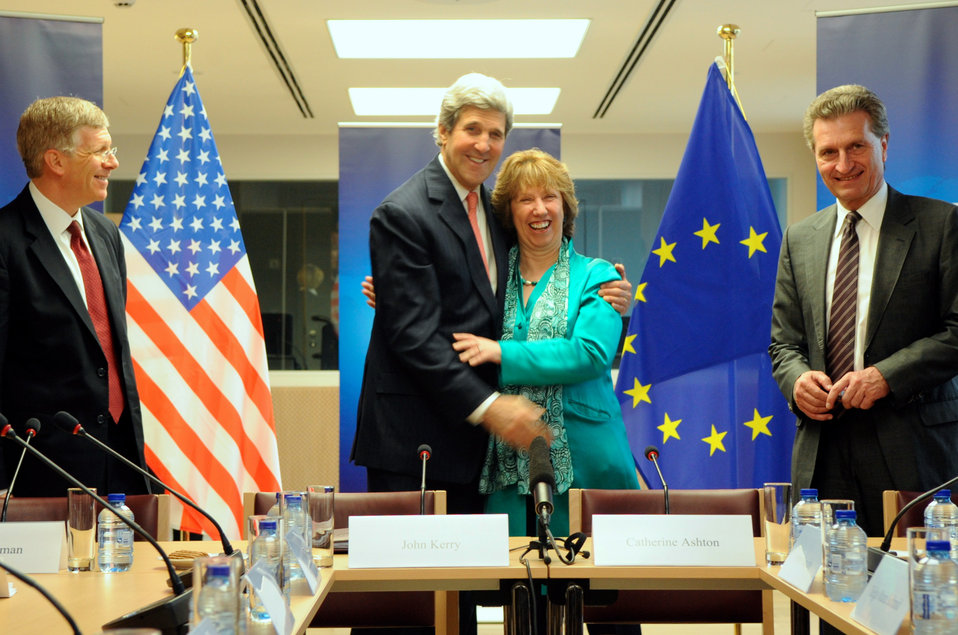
Secretary Kerry Embraces EU High Representative Ashton at Outset of Energy Meeting

U.S. Secretary of State John Kerry embraces European Union High Representative for Foreign Affairs Catherine Ashton in a lighthearted moment before a meeting focused on energy policy at the European Union External Action Service Headquarters in Brussels, Belgium, on April 2, 2014.